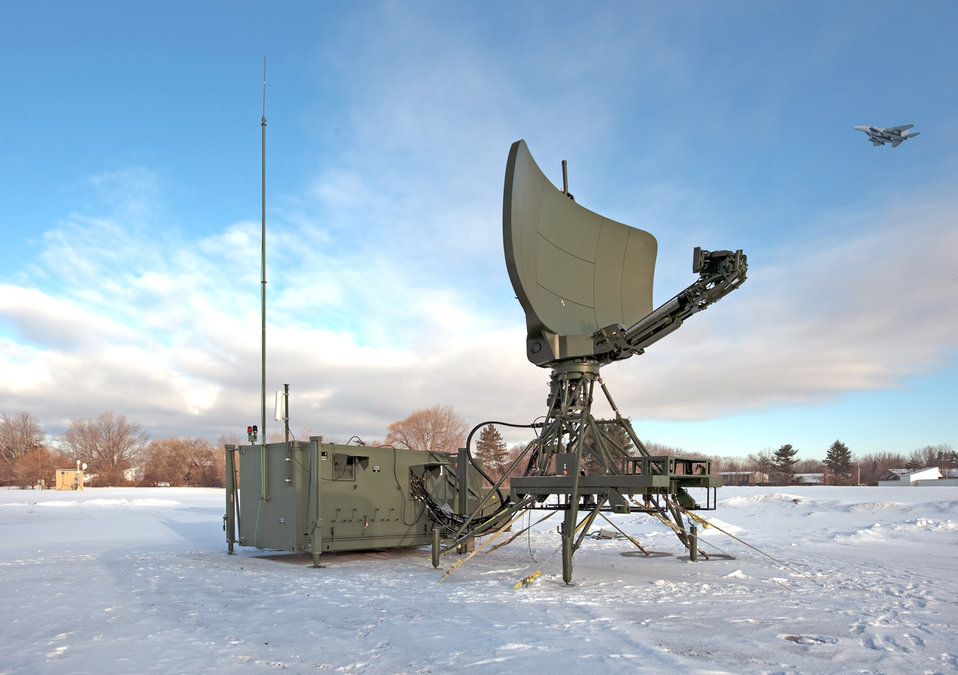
D-RAPCON

The Lockheed Martin TPS-79 mobile surveillance and air traffic control radar system is one of the mobile ATC radar systems Electronic Systems Center officials expect will be proposed for the Deployable Radar Approach Control program.